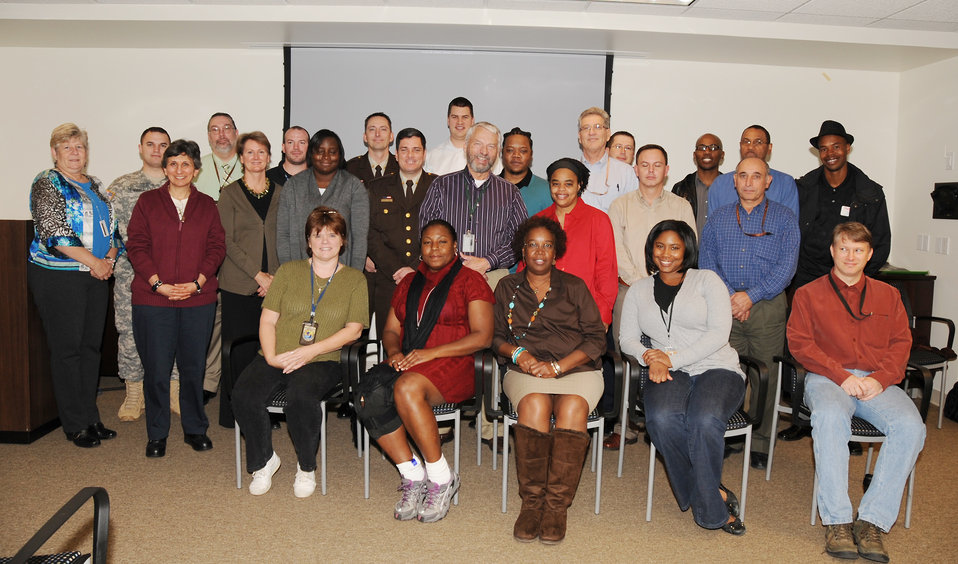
Honoring and Celebrating our Veterans

11.07.2012 Employees gathered in the Arlington Office to honor FWS Veterans